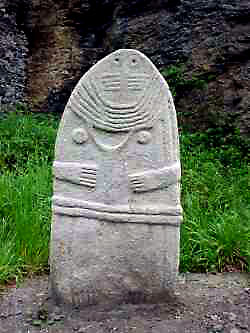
Statue-menhir dit « la Dame de Saint-Sernin », découverte en 1888 a Saint-Sernin-sur-Rance, et aujourd'hui conservée au musée Fenaille de Rodez (Aveyron).